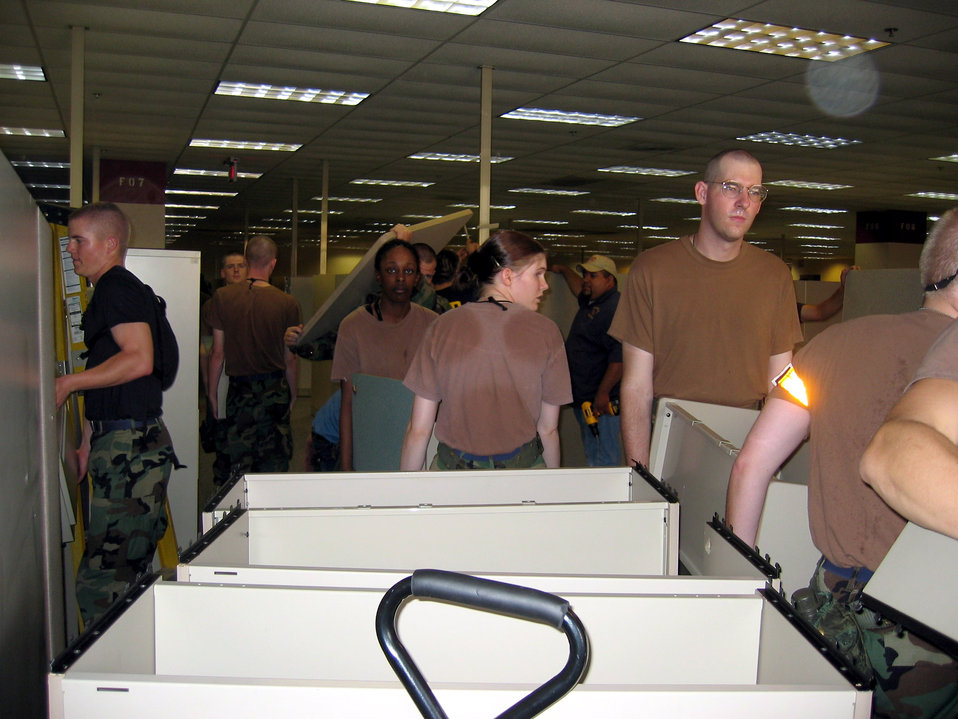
Lackland Airmen turn office areas into living spaces

SAN ANTONIO -- Airmen from nearby Lackland Air Force Base remove modular office furniture to make room for people displaced by Hurricane Katrina. In all, 200 Airmen helped turn a 350,000 square foot office building into a living area.